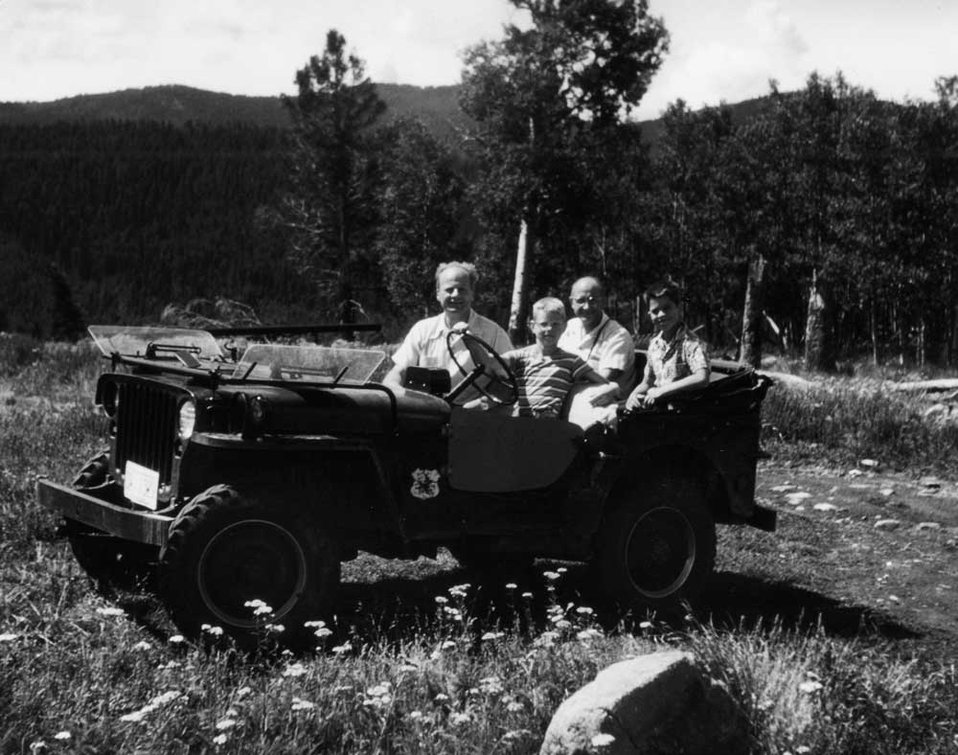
BETHE AND FERMI